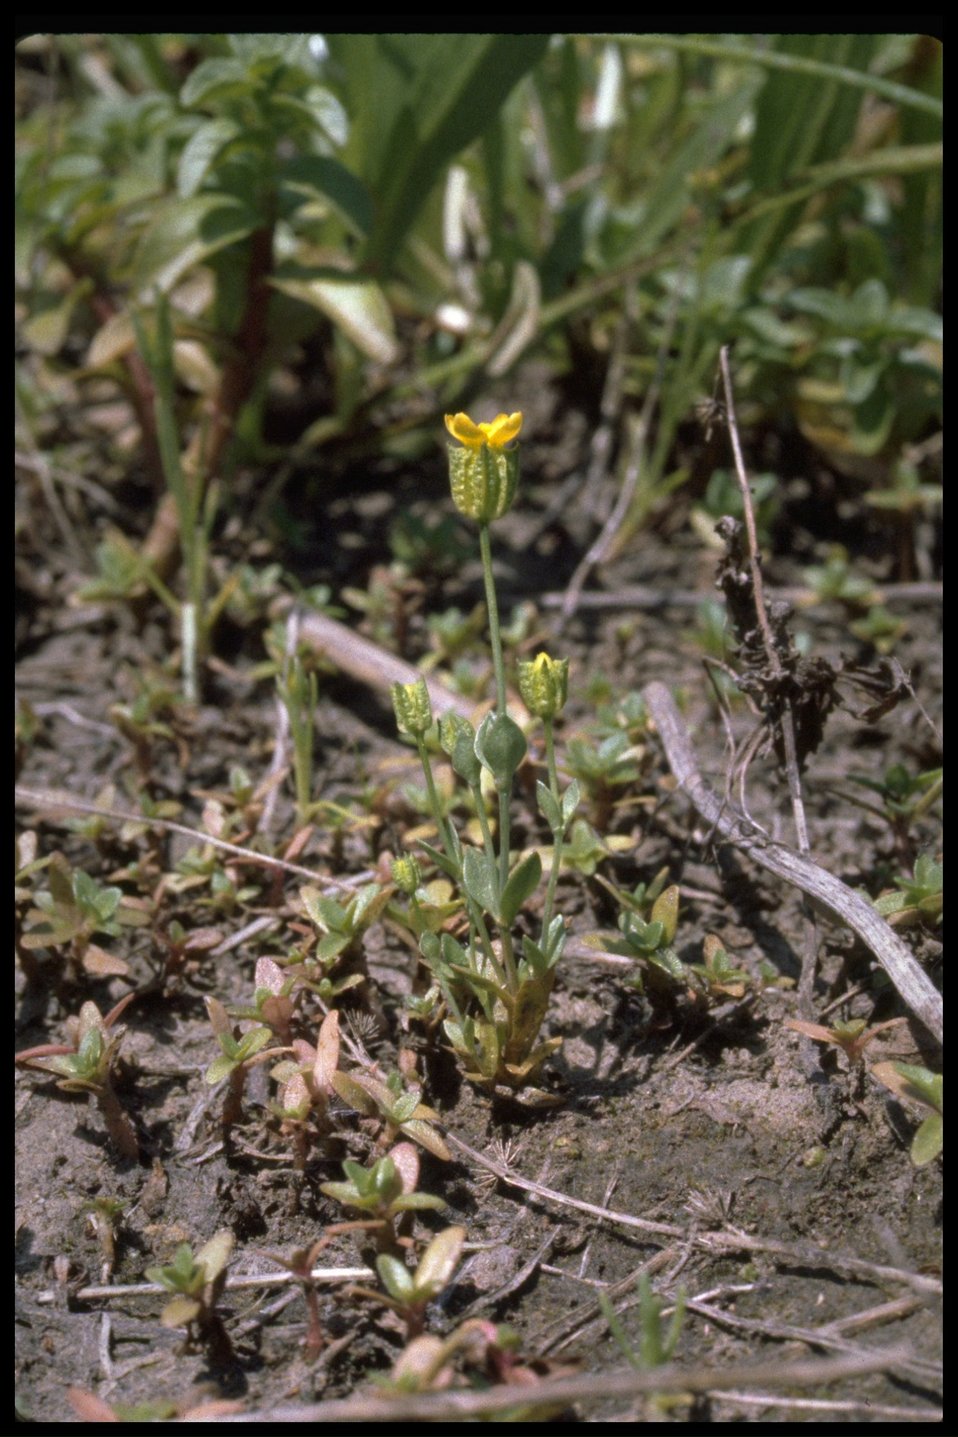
Farshot of timwort (Cicendia quadrangularis).